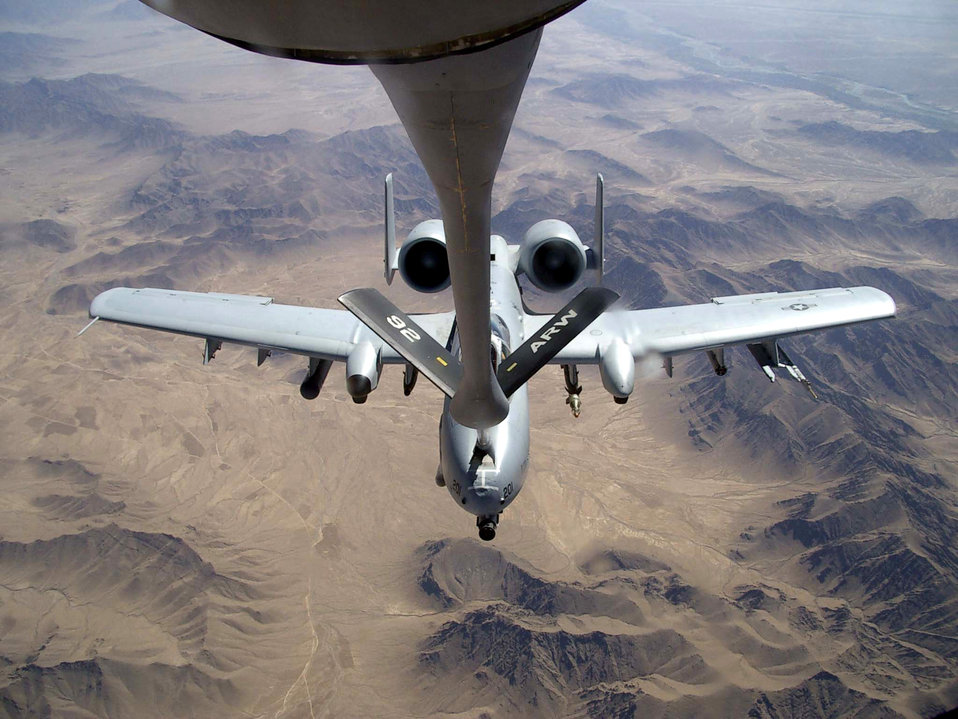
Refueling over Afghanistan

A KC-135 Stratotanker from the 22nd Expeditionary Air Refueling Squadron prepares to refuel an A-10 Thunderbolt II over Afghanistan. The 22nd EARS is part of the 376th Air Expeditionary Wing at Manas Air Base, Kyrgyzstan.